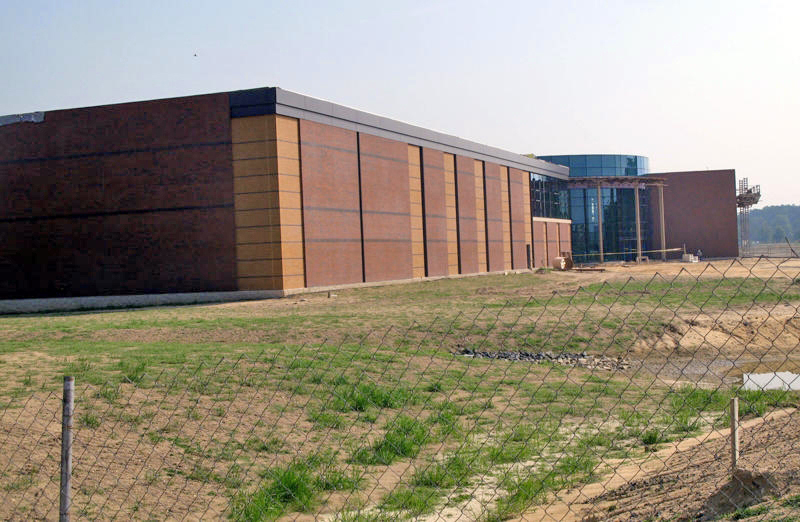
Realignment, closure plan continues on track

A new building under construction at Fort Meade, Md., will accommodate Defense Media Activity employees as part of the 2005 Base Realignment and Closure Plan. It's among millions of dollars in construction dotting the Fort Meade landscape as Defense Department officials prepare to meet the September 2011 BRAC implementation deadline.